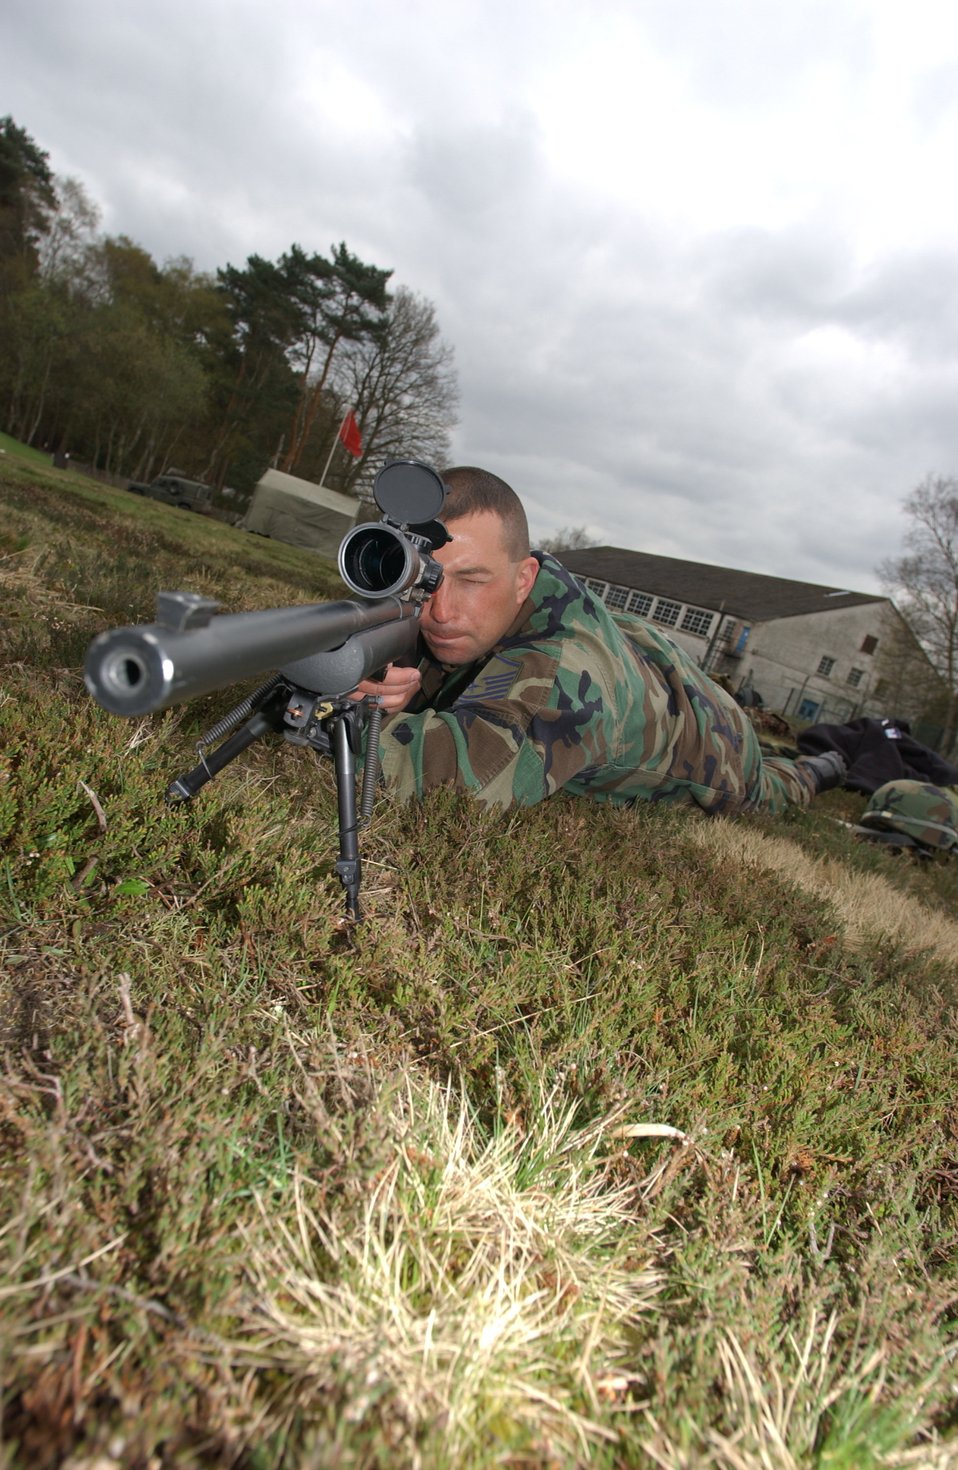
Taking aim

ROYAL AIR FORCE BISLEY, England -- Master Sgt. Craig Lamudge practices shooting an M-24 sniper rifle during practice for the Atlantic Challenge Shooting Competition here recently. The annual competition is among the best shooters in the U.S. Air Force Security Forces career field and the Royal Air Force Regiment. Sergeant Lamudge is the Air Force Security Forces Center superintendent of the combat weapons program at Lackland Air Force Base, Texas.